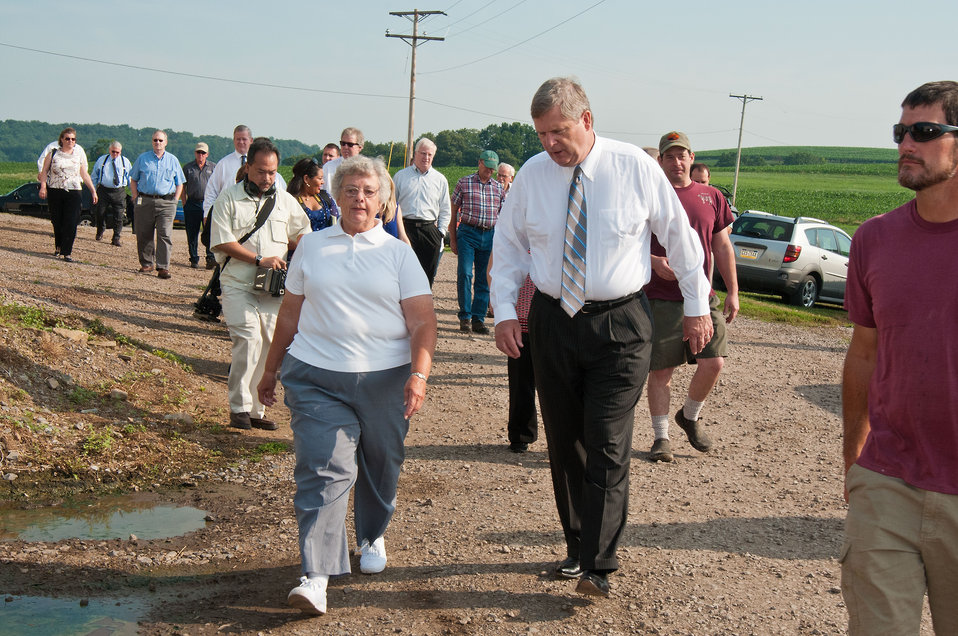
Mary Jane Stoltzfus (left) and Agriculture Secretary Tom Vilsack (right) discuss the history and operation of Pennwood Dairy Farms in Berlin, PA on Tuesday, July 17, 2012. Stoltzfus and her family have owned the dairy for 50 years. During Secretary Vilsack’s visit he highlighted the U.S. Department of Agriculture’s (USDA) energy efficiency programs and announced a new effort to help rural consumers make affordable, energy-efficient improvements to their homes and businesses. Pennwood Dairy Farms is using an anaerobic digester to produce energy to operate the farm. The digester captures biogas for energy production.